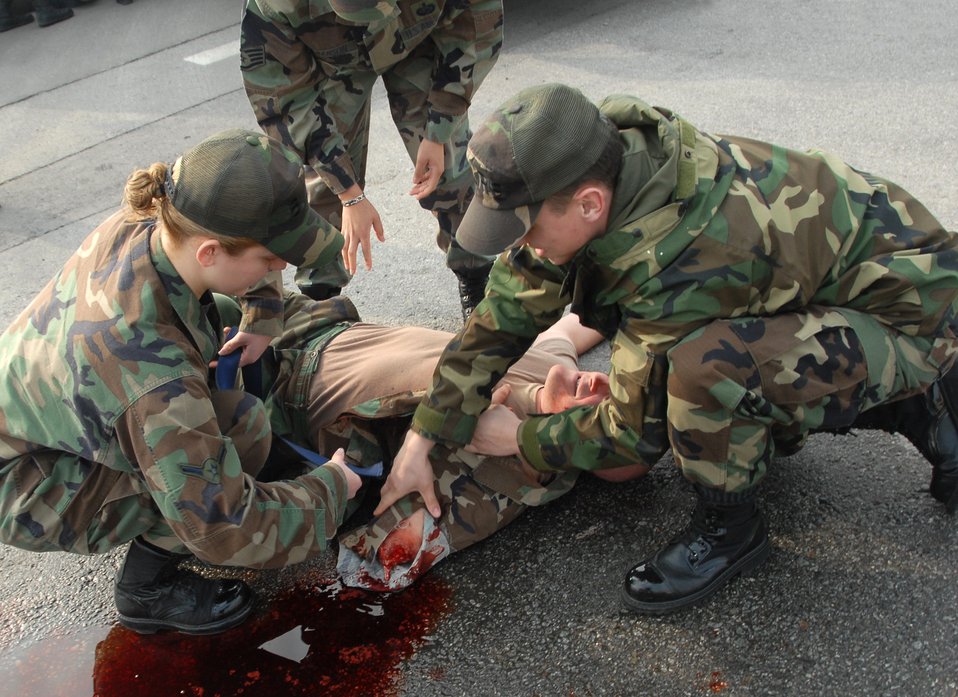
Wolf Pack Warriors

Members of the 8th Fighter Wing disaster response team perform first aid on a simulated accident victim Feb. 9 during a major accident response exercise on Kunsan Air Base, South Korea. The accident, designed to provide realistic training for emergency response teams, simulated a major vehicle accident with multiple victims.